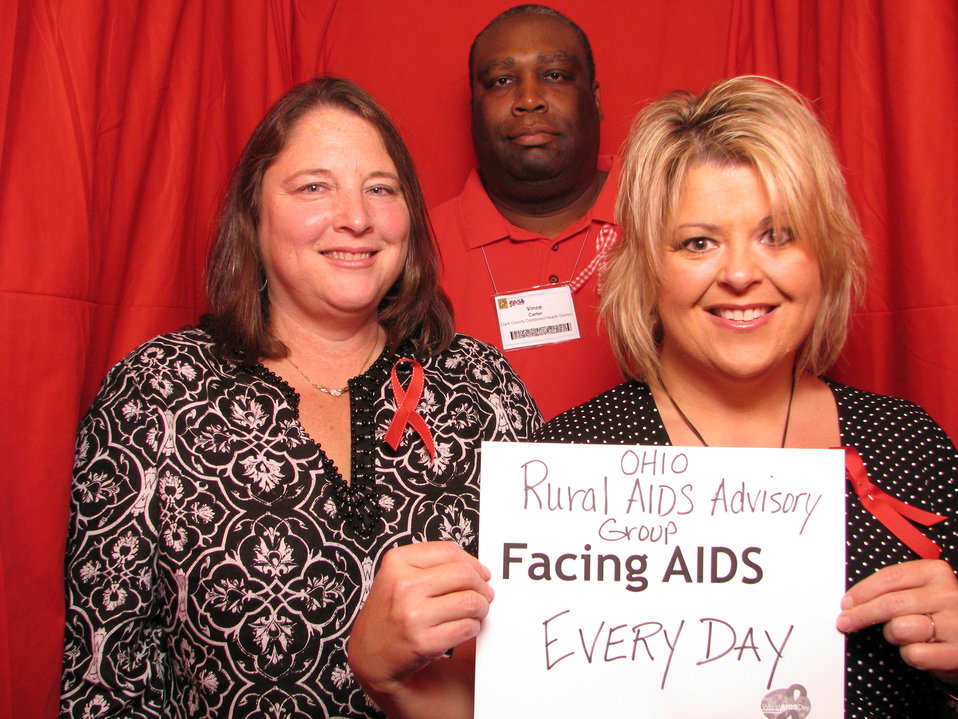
OHIO Rural AIDS Advisory Group FACING AIDS EVERY DAY.

From the AIDS.gov photo booth at the U.S. Conference on AIDS, September 2010 (Orlando, FL).